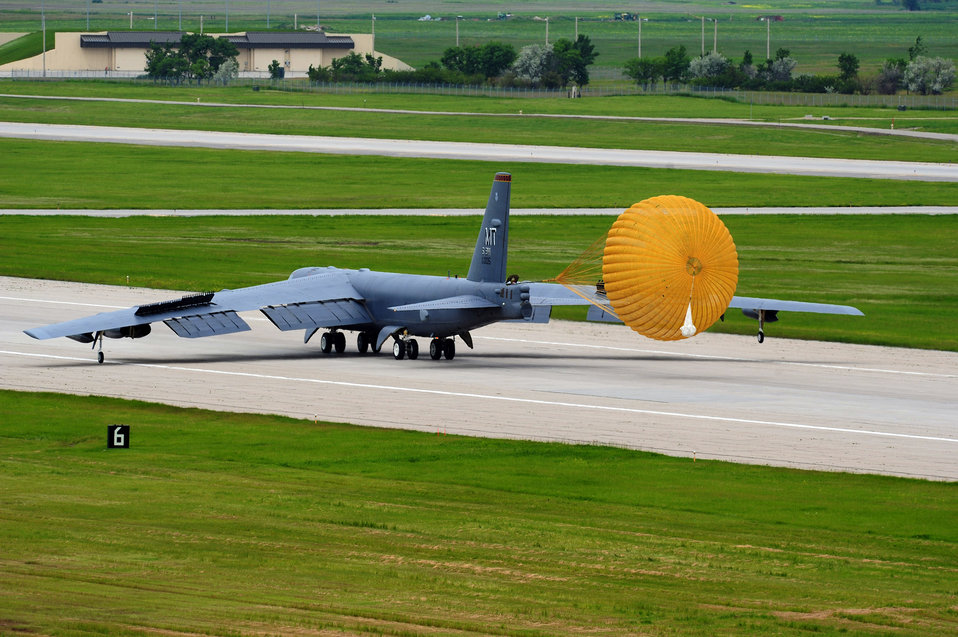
Touchdown!

A B-52 Stratofortress lands at Minot Air Force Base, N.D., June 30, 2011, after a sortie.